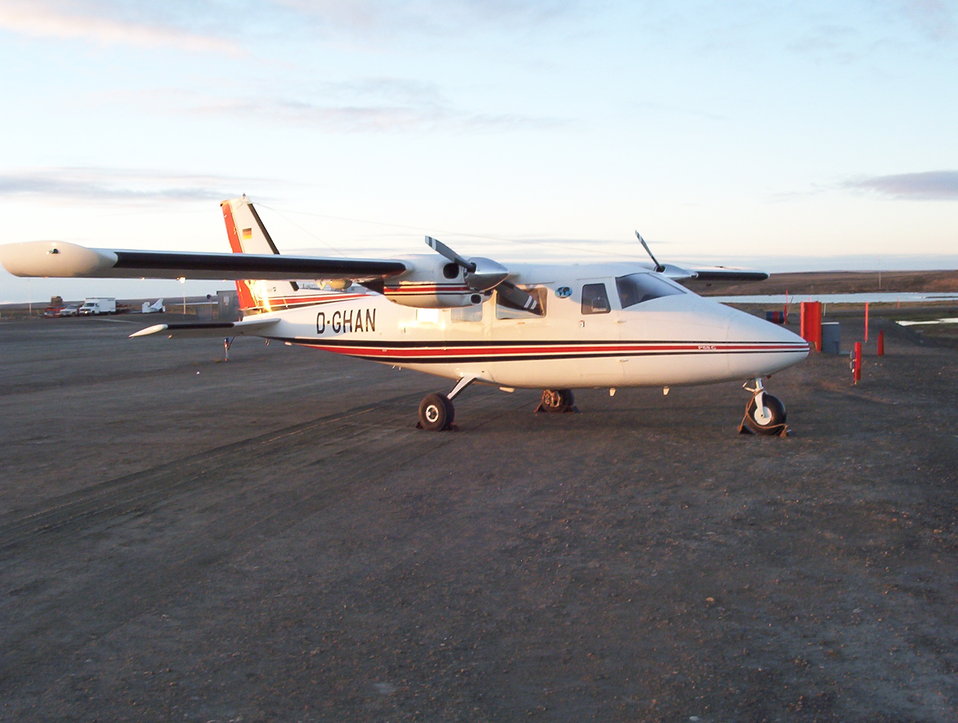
D-GHAN Partenavia p.68 Victor (P68) 02